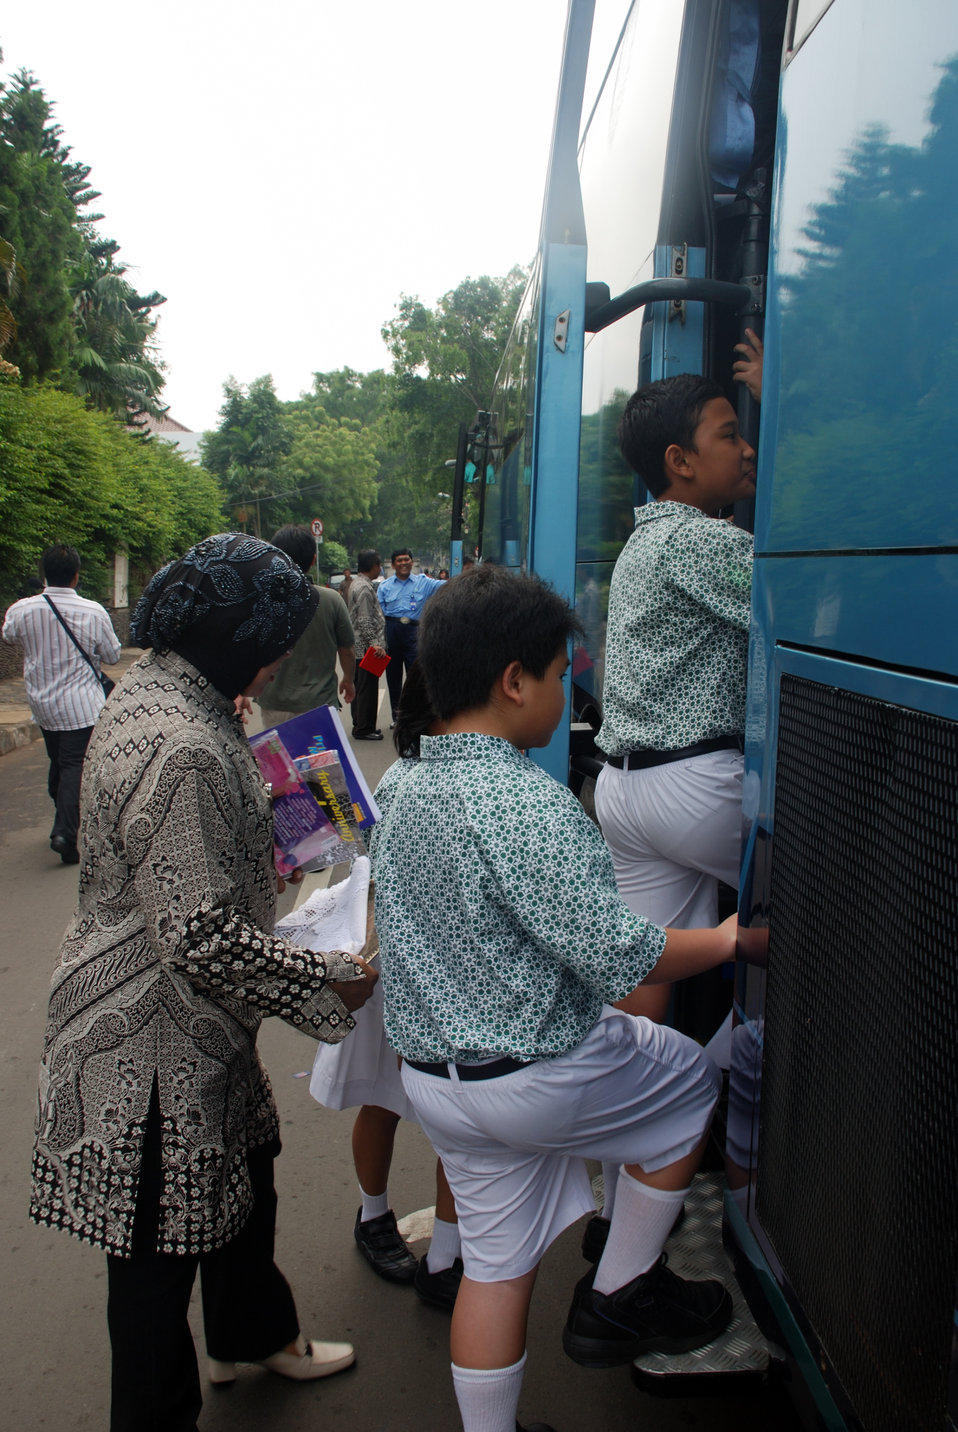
Behind the Scenes: Indonesian Students Prepare for Secretary Clinton's Arrival

Ms. Zubaidah and the students of Menteng Elementary School No. 1 board the bus to Halim Airport in Jarkarta, Indonesia during the visit of U.S. Secretary of State Hillary Rodham Clinton February 18, 2009.